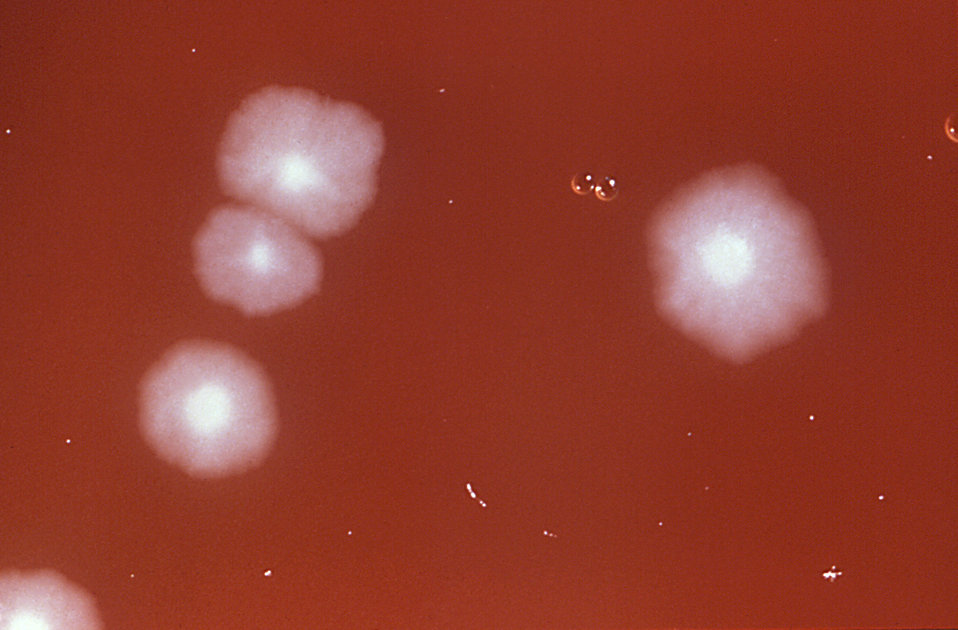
This is a blood agar, cycloserine mannitol plate culture growing colonies of Clostridium difficile for 48 hours.